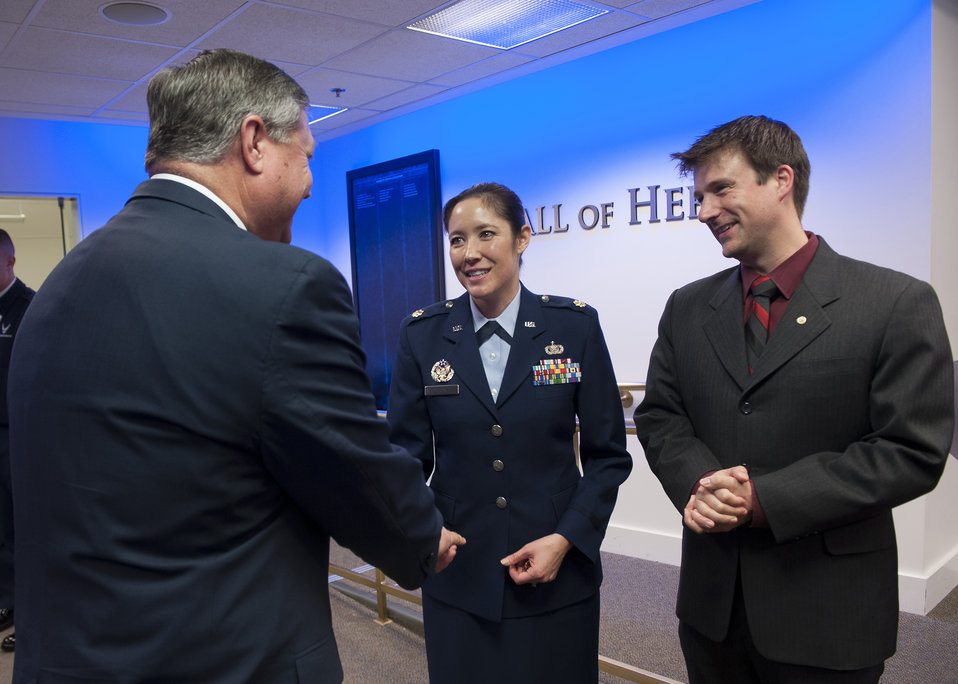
2011 Sijan awards

Secretary of the Air Force Michael Donley (left) congratulates Maj. Laura DeJong after she was presented the Lance P. Sijan USAF Leadership Award by Air Force Chief of Staff Gen. Norton Schwartz during a ceremony in the Pentagon's Hall of Heroes on April 6, 2012, Washington, D.C. The Sijan Award was created in 1981 to recognize individuals who demonstrate the highest qualities of leadership both in and out of uniform. Sijan, was an Air Force Academy graduate. At the time of his death he was an Air Force Captain and fighter pilot. He was shot down during a mission in Vietnam and later died while being held in a prisoner of war camp. He was awarded the Congressional Medal of Honor posthumously.